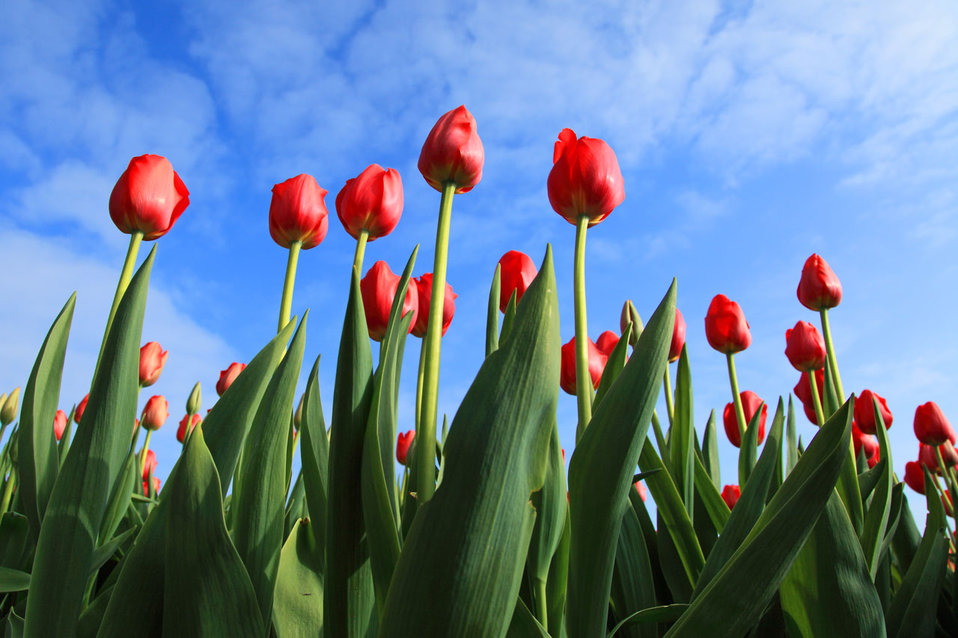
Tulips with blue sky

Red tulips against blue sky with some clouds.